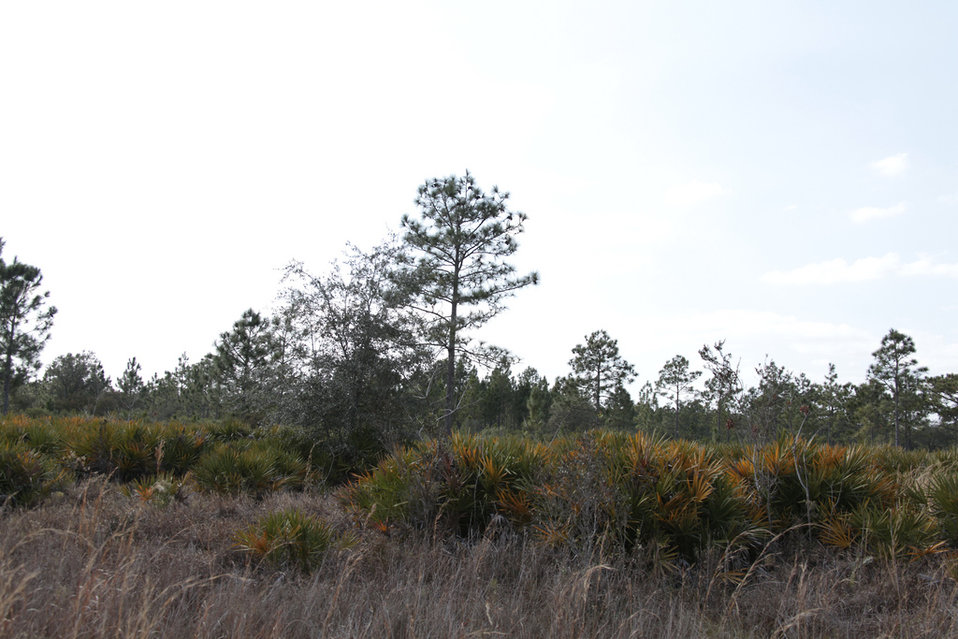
Everglades Headwaters Refuge

In January Interior Secretary Ken Salazar formally accepted the first transfer of land for the new Everglades Headwaters National Wildlife Refuge, which will conserve some of Florida's last undeveloped grasslands and pine savannahs and protect the Kissimmee River headwaters of the Everglades. This photo was taken Jan. 18, 2012